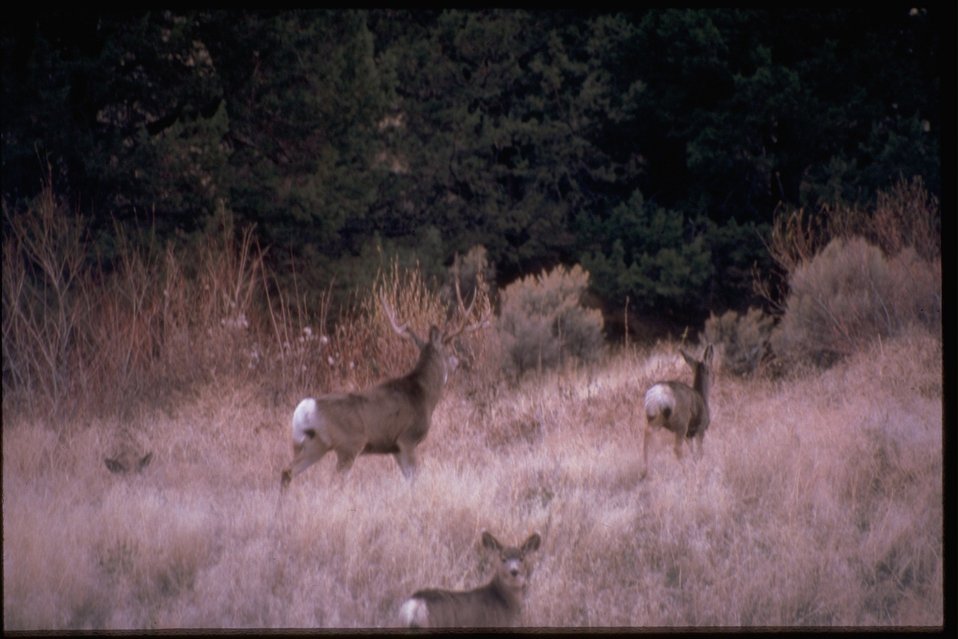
Three Mule Deer: A buck and two doe.